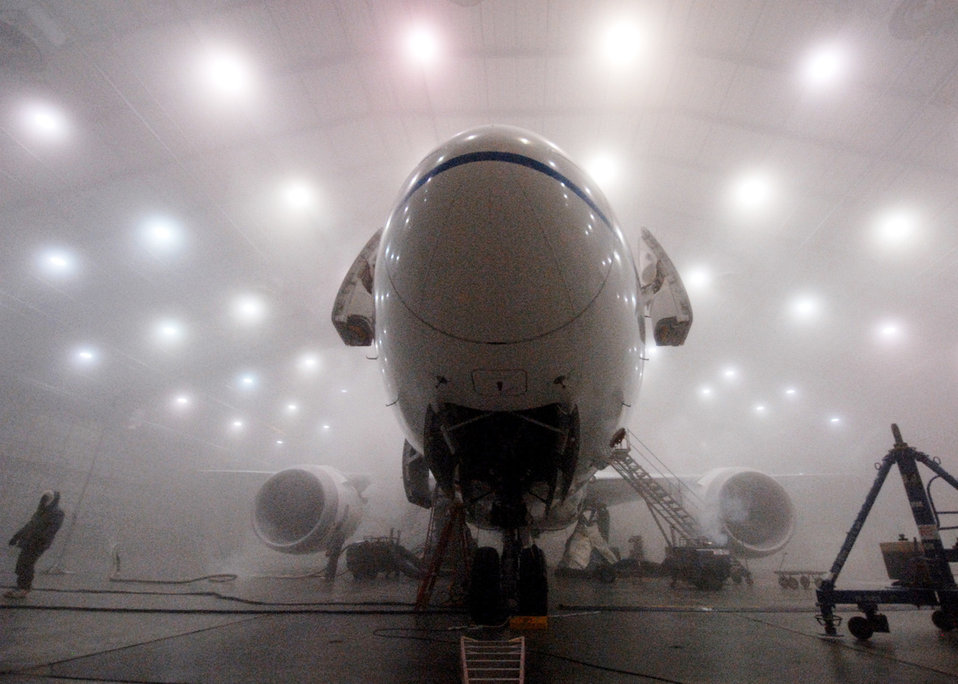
Boeing officials bring 787 to Eglin AFB for weather tests

A Boeing 787 Dreamliner